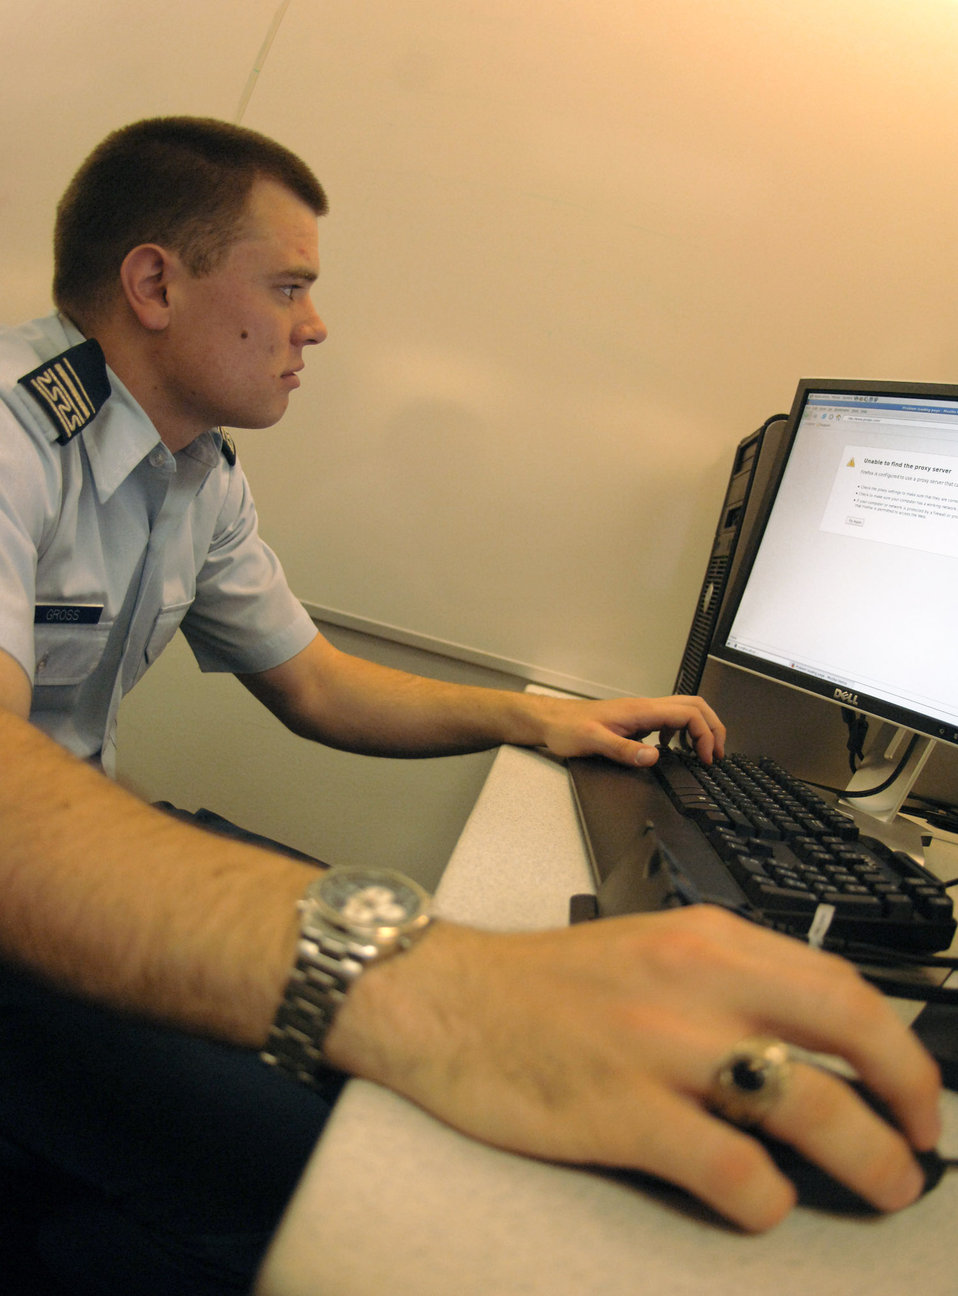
Cadet cyberwarriors head to AFIT

Cadet 1st Class Aaron Gross checks out the network during lab time May 12 at the Air Force Academy in Colorado. The cadet, from Anaheim, Calif., will be one of the first Academy graduates to go directly from the school to the Air Force Institute of Technology's cyber warfare track. Cadet Gross, a member of the Academy's Cadet Squadron 3, researched active-eye detection in video streams for his information warfare class.